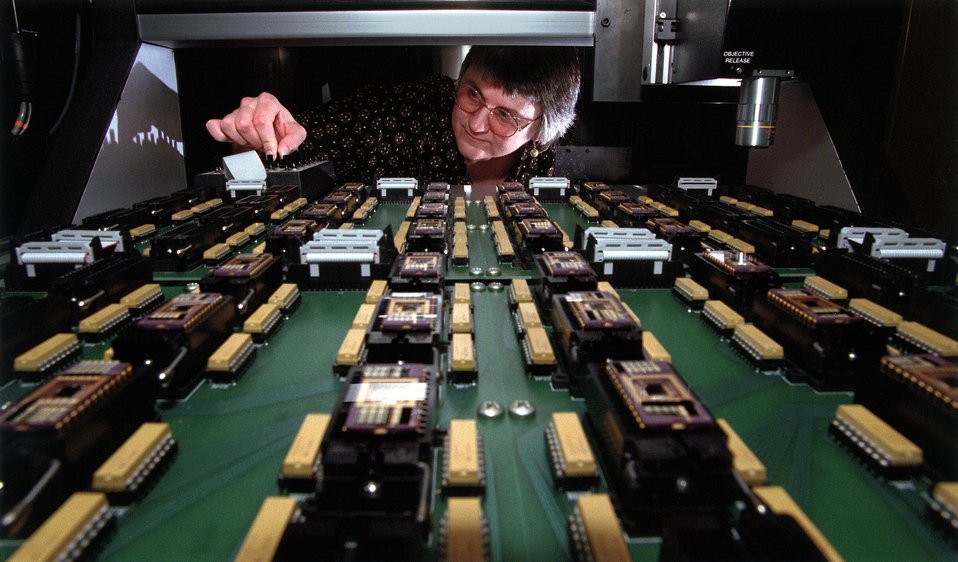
MICRO-ELECTRO-MECHANICAL SYSTEMS (MEMS) BEING TESTED.

MACHINES THAT ARE SO SMALL THEY CAN'T BE SEEN WITH THE NAKED EYE NEED SPECIAL TESTING METHODS. THESE TINY MACHINES ARE PART OF THE MICROELECTROMECHANICAL SYSTEMS (MEMS) AT SANDIA. MEMS DEVICES ARE CREATED IN THE MICROELECTRONICS DEVELOPMENT LAB AT SANDIA. THE MDL IS A WORLD CLASS FABRICATION FACILITY DEDICATED TO PROVIDING DEVELOPMENT AND ENGINEERING CAPABILITIES TO SUPPORT INDUSTRY, GOVERNMENT AND PROGRAMS OF NATIONAL INTEREST.